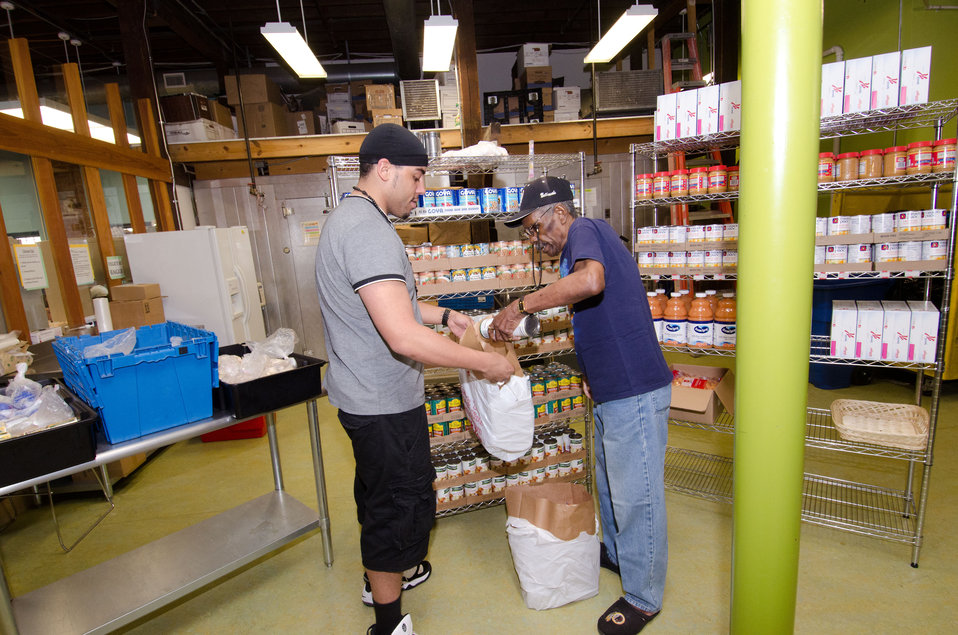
Kevin McNeil (left) helps Walter Garnett with his selection of food from Bread for the City on Friday, April 29, 2011 in Washington, DC.